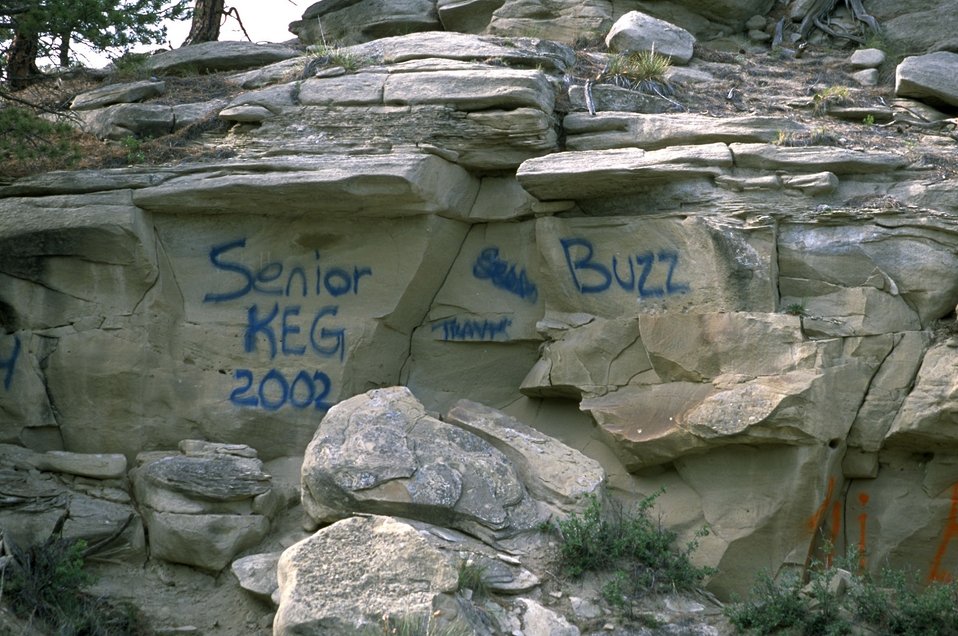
Graffiti found below the rimrocks in the Acton Recreation Area